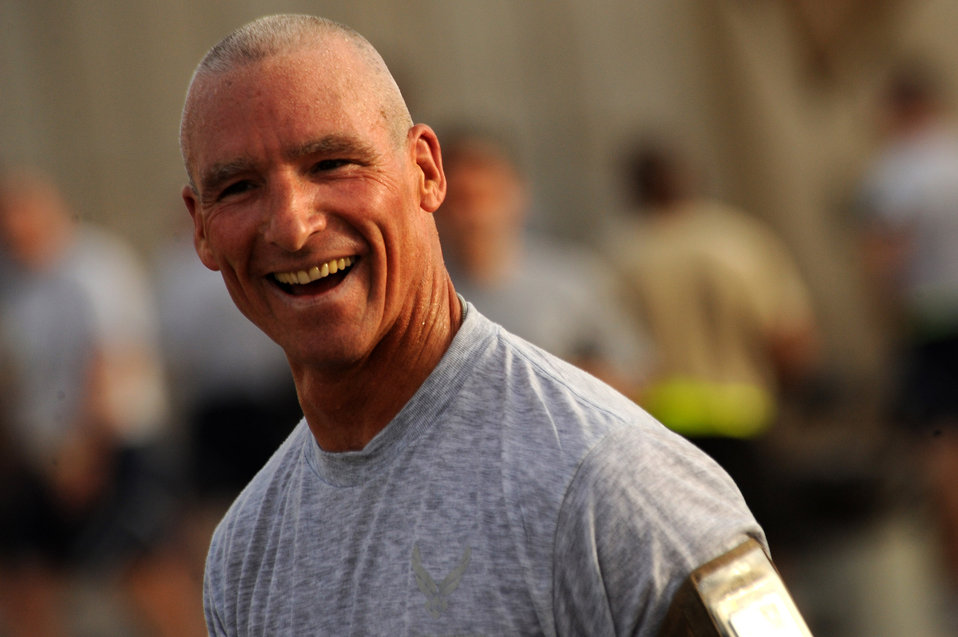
Servicemembers take part in Baghdad Boilermaker

Master Sgt. Jeffrey Conant, one of the organizers of the Baghdad Boilermaker, smiles after finishing the 15-kilometer race. More than 240 deployed servicemembers from around the Victory Base complex participated in the first Baghdad Boilermaker race June 13 at Sather Air Base, Iraq. Sergeant Conant is with the 447th Expeditioanry Civil Engineer Squadron and